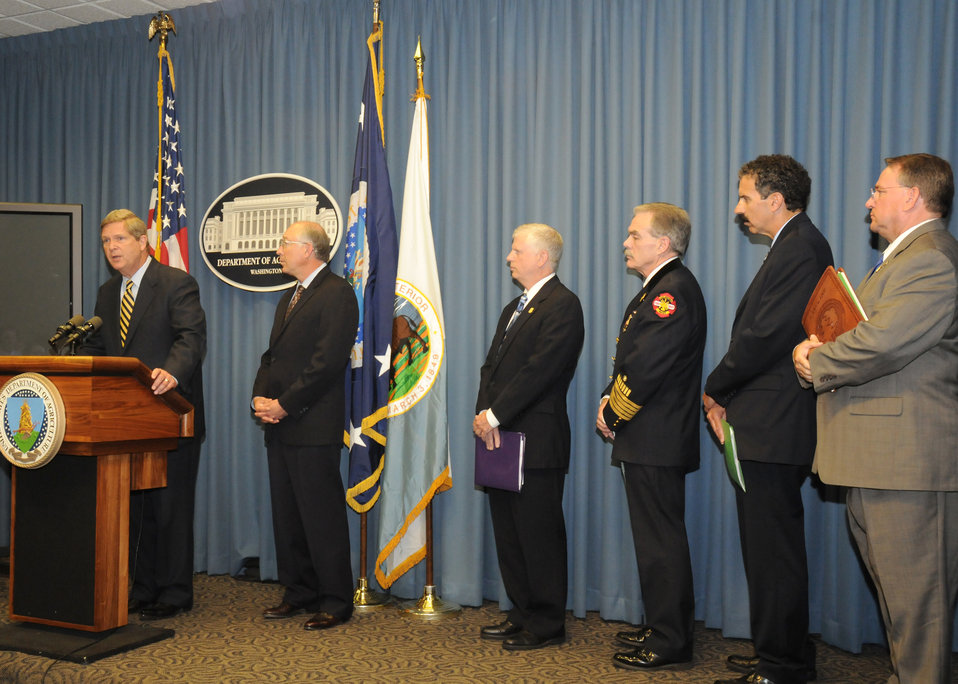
Agriculture Secretary Tom Vilsack makes an opening statement at a press briefing held in the Department of Agriculture in Washington, DC, on Thursday, June 14, 2010. The press briefing provided fire risk assessments for the 2010 fire season in relation to weather conditions and federal readiness to respond to wildfires with partners across jurisdictions. (Standing L to R Interior Secretary Ken Salazar, Forest Service Chief Tom Tidwell, First Vice President International Association of Fire Chiefs Jack Parow, National Fire Weather meteorologist Rick Ochoa, and Director National Association State Forester Steven Koehn). USDA photo 10di1408-34.